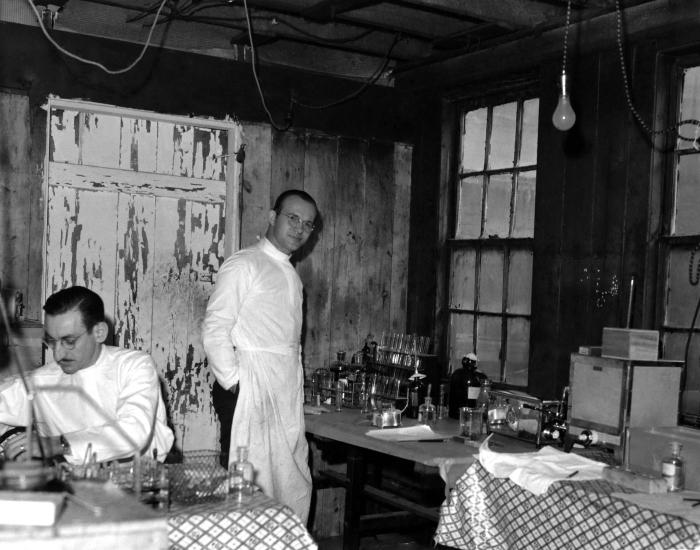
This historical image was provided by the Center for Disease Control's (CDC), National Institute for Occupational Safety and Health (NIOSH). The photograph depicted two public health scientists in the process of testing samples, which were gathered during a public health study that measured the air quality inside the factories involved in the production of hats from animal furs. Neither man was wearing gloves, or filtered breathing masks, but did 'seem' to be wearing protective eyewear.